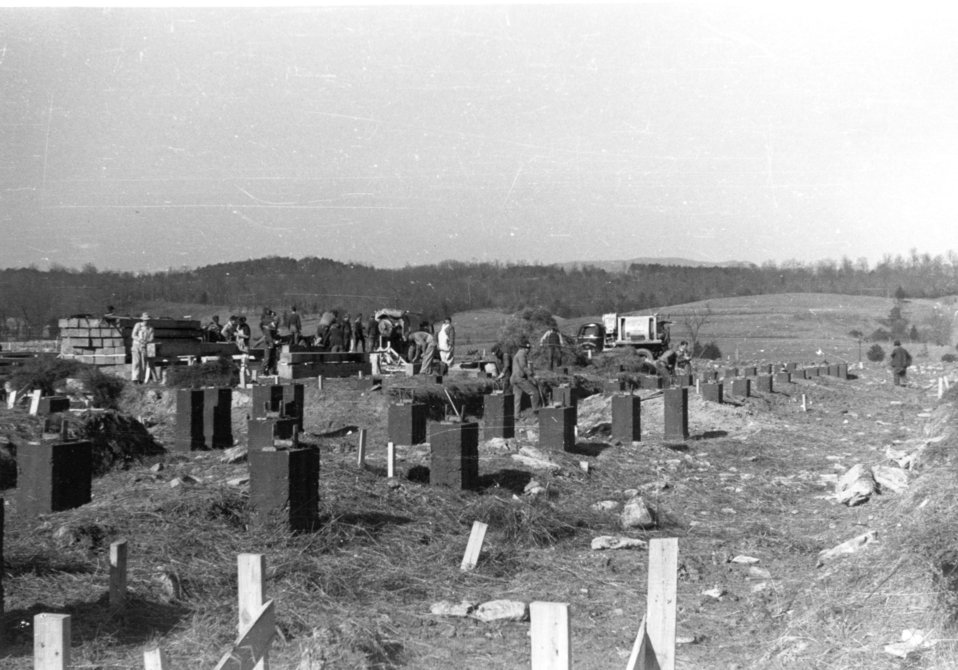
Construction activity at Oak Ridge